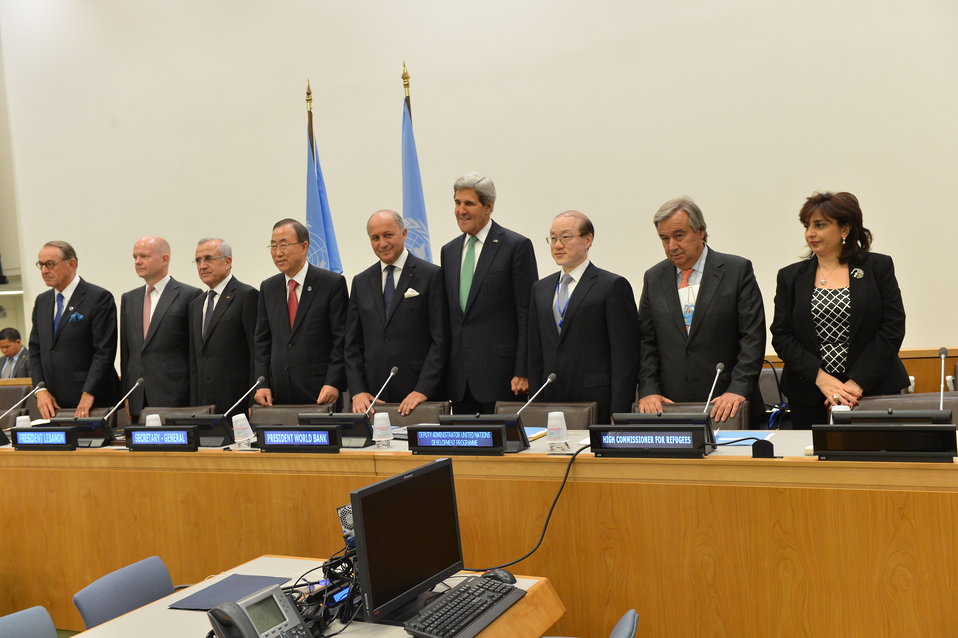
Secretary Kerry Participates in a Meeting of the International Support Group for Lebanon

U.S. Secretary of State John Kerry participates in a meeting of the International Support Group for Lebanon in New York City on September 25, 2013.